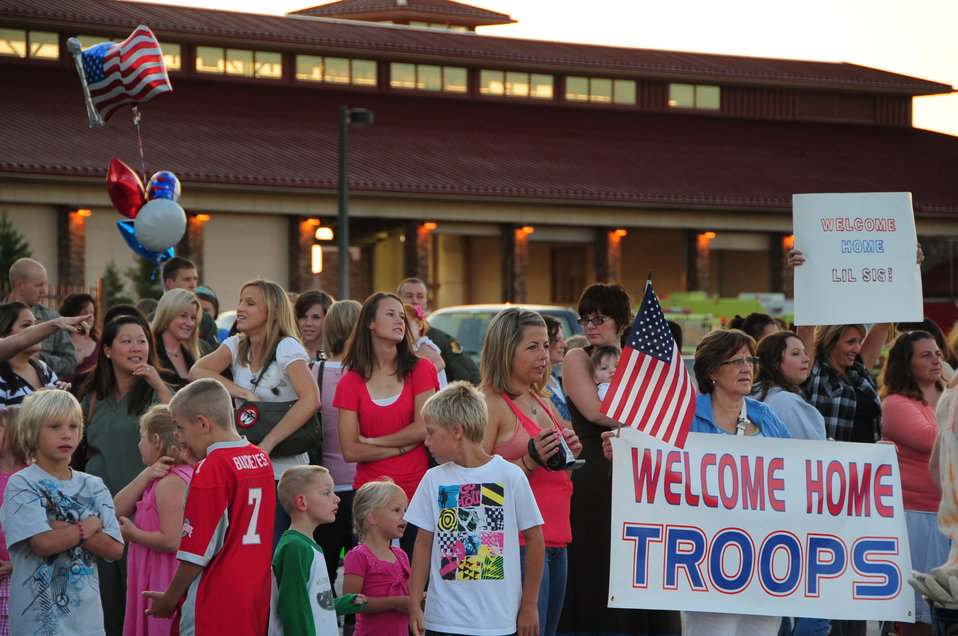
Welcome back

Friends and family members of deployed Airmen wait for the plane to land July 28, 2010, at Ellsworth Air Force Base, S.D., July 28, 2010, More than 350 Airmen are scheduled to return home from Southwest Asia.